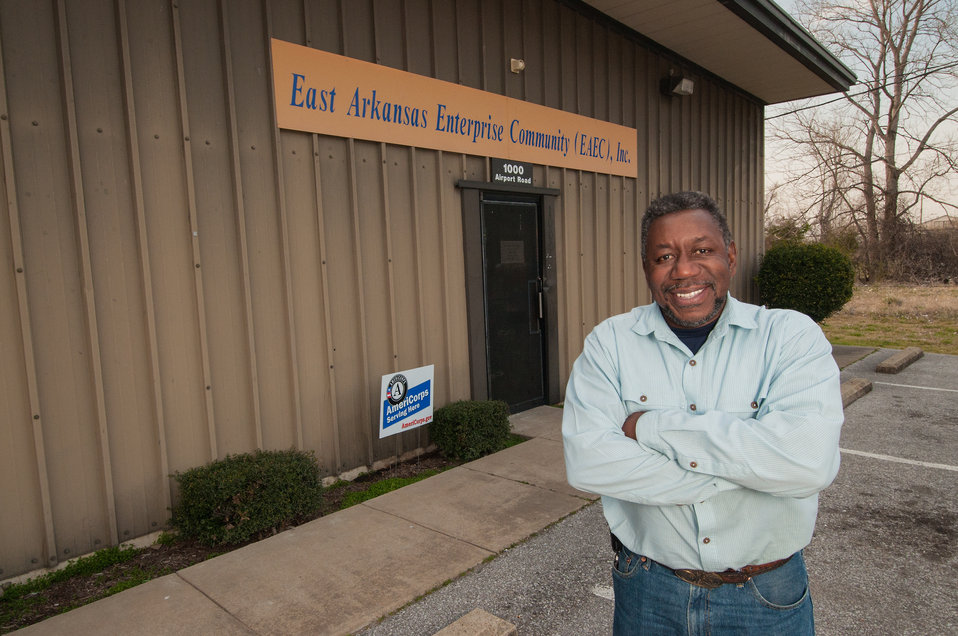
U.S. Department of Agriculture (USDA) Arkansas Strike Force Leader Charlie Williams stands in front of the East Arkansas Enterprise Community, (EAEC) Inc. in Forrest City, AR on Mar. 4, 2013. The EAEC is a beneficiary of the Seeds of Change Implementation Plan organized by USDA in partnership with Heifer International (an International organization whose mission is to work with communities to end hunger and poverty and care for the Earth) and various for-profit and non-profit organizations. The scope of the plan is to use sustainable agriculture to build food systems in the Arkansas Delta. The program has evolved into the Arkansas Delta Seeds of Change (ADSOC). The EAEC is one of 42 community-based organizations located in high poverty areas in the U.S. to benefit from the ADSOC Initiative.